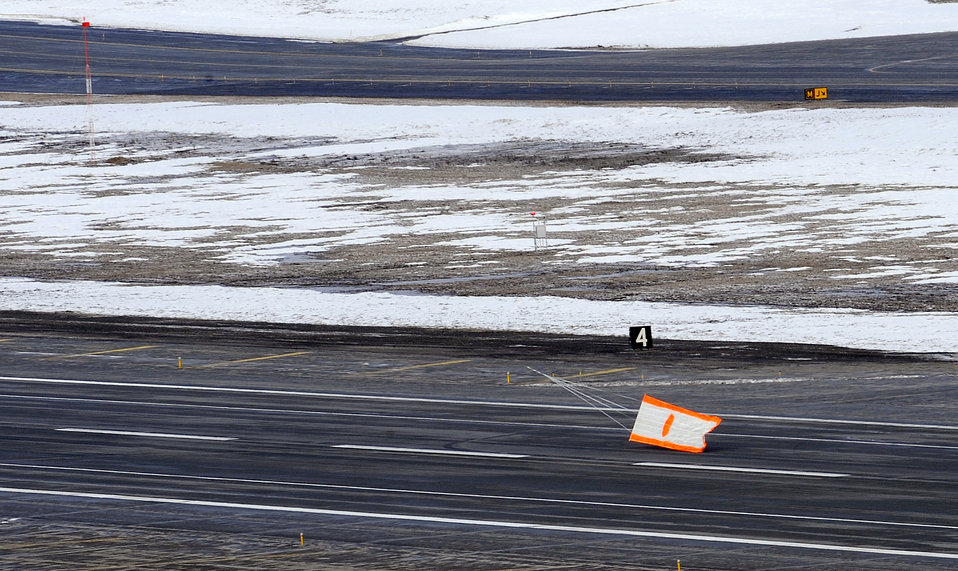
Operations group validates new capability

An air-to-air gunnery target banner lifts off the runway prior to a live fire training mission over an Alaskan range April 7, 2010, at Elmendorf Air Force Base, Alaska. The air-to-air gun mission consisted of a Cessna Conquest towing an aerial banner 2,000 feet behind it while two F-15 Eagles took turns firing at the banner.